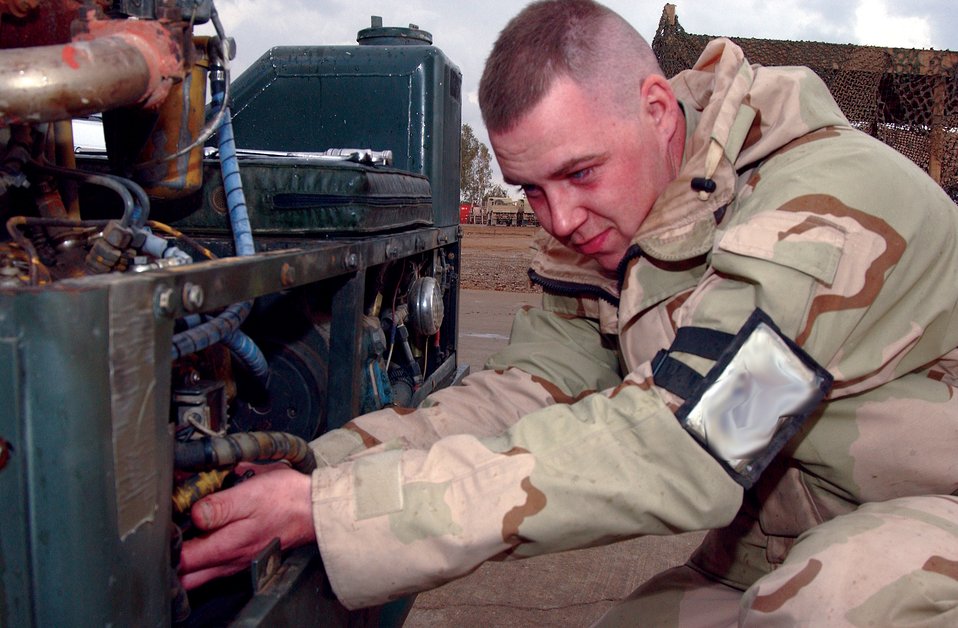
AGE keeps ground mission running

BALAD AIR BASE, Iraq, -- Airman 1st Class Todd Spencer changes the starter on a bomb lift used to raise missiles and bombs being mounted onto an aircraft. Besides flightline operations, he and other 332nd Expeditionary Maintenance Squadron Aerospace Ground Equipment Airmen help civil engineers provide power to housing areas here.